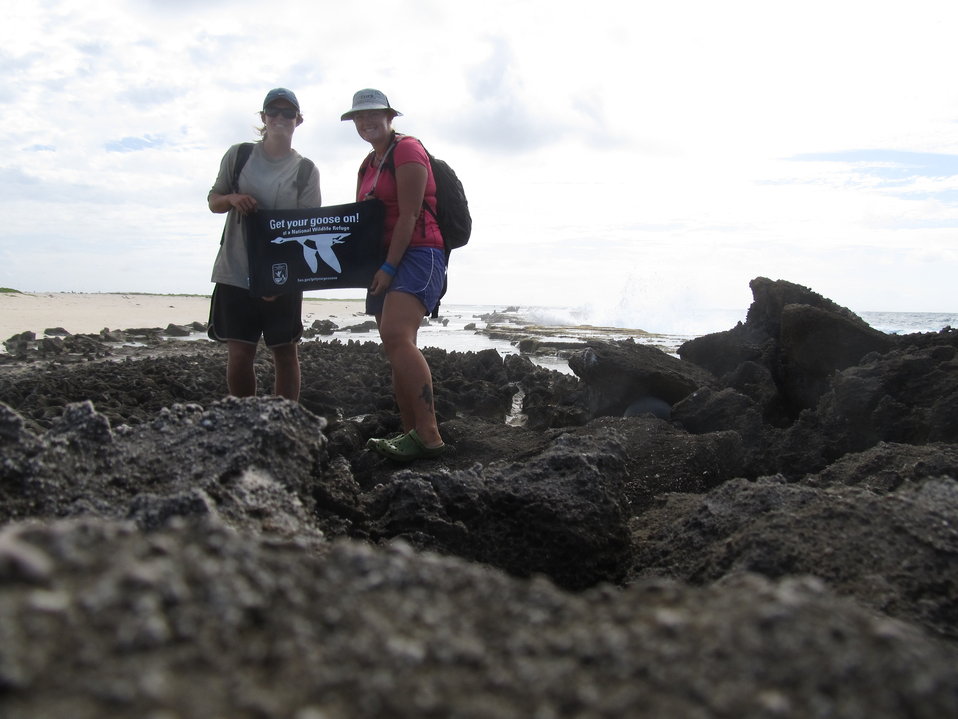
Get Your Goose On! - Laysan Style

Photo taken at Laysan Island in the Papahanaumokuakea Marine National Monument, Hawaiian Islands National Wildlife Refuge. Laysan is located approximately 800 miles northwest of Honolulu, Hawaii and is a remote field camp staffed year round for habitat restoration and population monitoring.